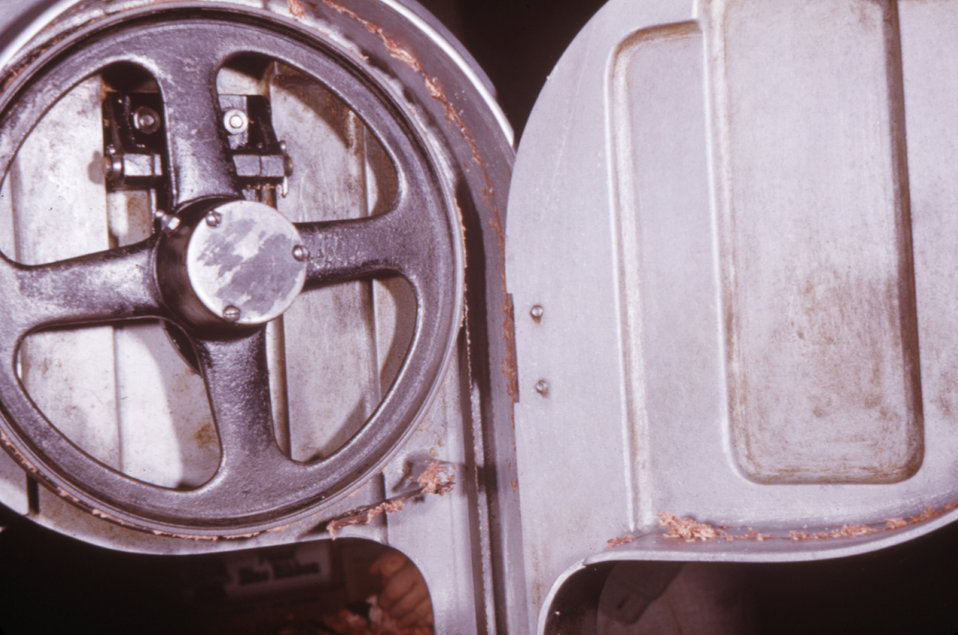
This photograph shows a dirty meat saw found during a public health inspector's rounds of a 1975 migrant worker camp.